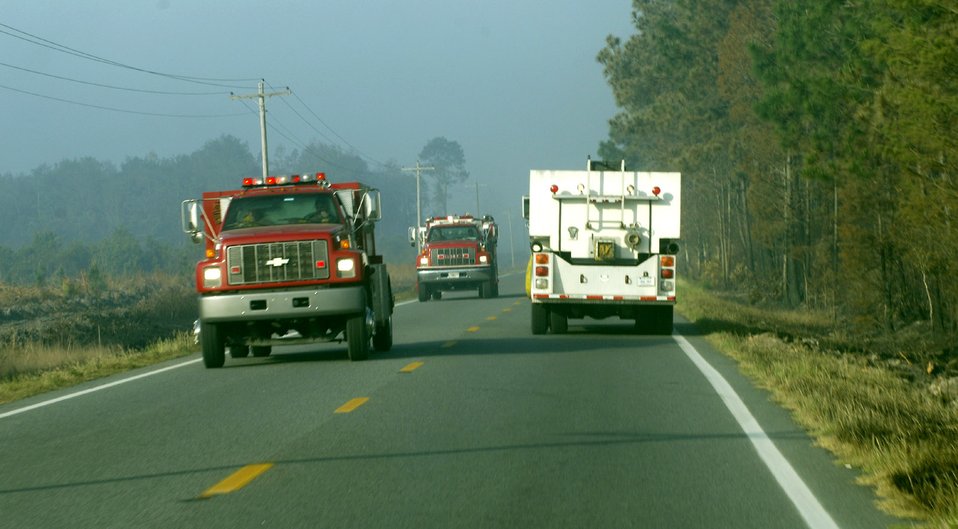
Air Force firefighters help to put out Georgia fires

Moody Air Force Base firefighters rush to the scene of a spreading fire April 21 that swept through rural southeastern Georgia. The 23rd Civil Engineer Squadron Fire and Emergency Services Flight are helping support local fire departments by ensuring they have sufficient amounts of water to put out the fires. By using tankers that can hold 5,000 gallons of water, up to five fire trucks can be filled.